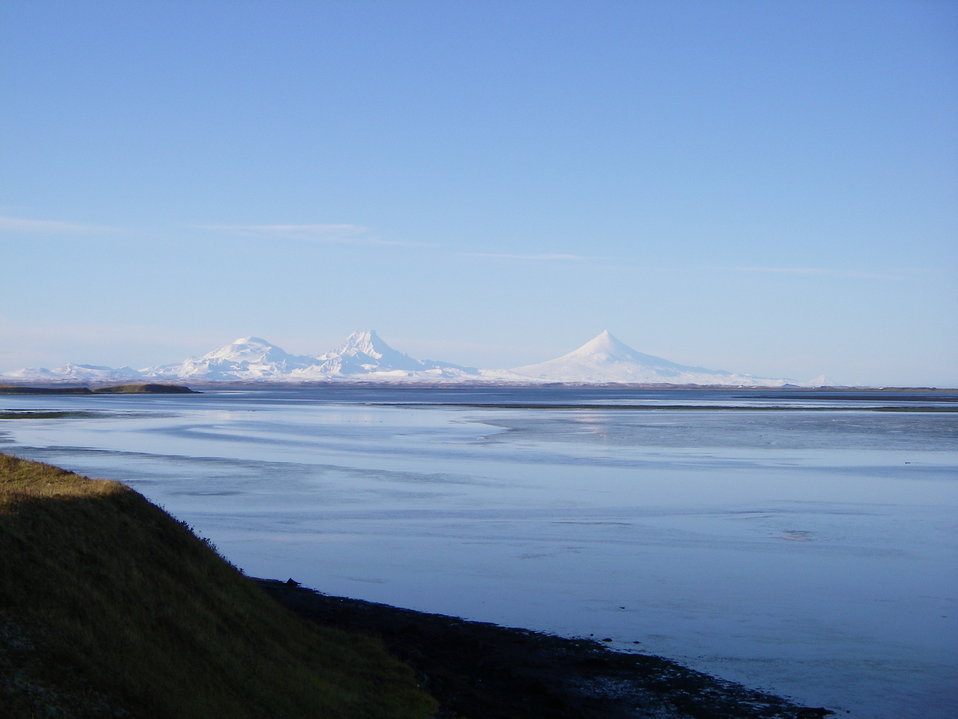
Unimak Volcanoes

View of Unimak volcanoes from Grant Point, Izembek National Wildlife Refuge